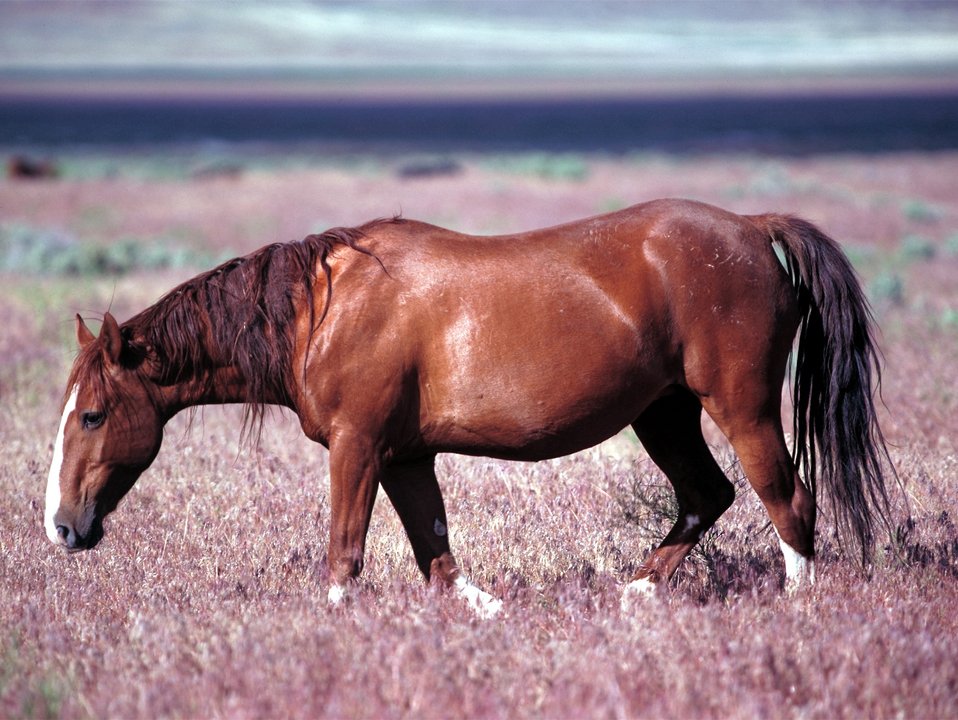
Onaqui Herd near Dugway, Utah.